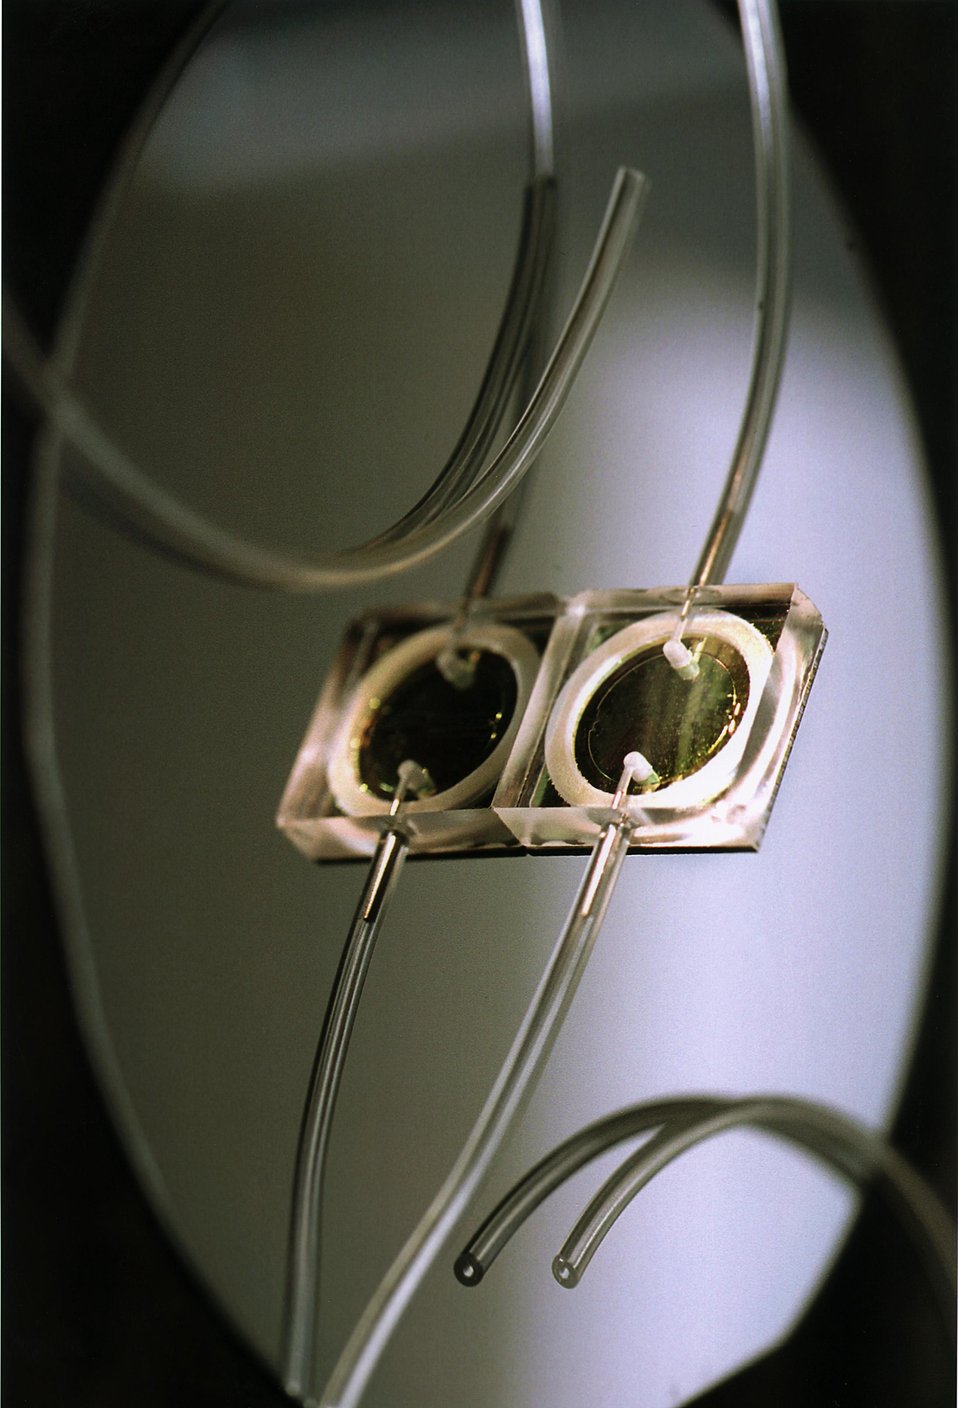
A DIME SIZE BIOCAVITY MICROLASER, CONNECTED TO TUBES THAT ASPIRATE BRAIN CELLS.
A 'SMART SCALPEL' MECHANISM INTENDED TO DETECT THE PRESENCE OF CANCER CELLS AS A SURGEON CUTS AWAY A TUMOR OBSCURED BY BLOOD, MUSCLE AND FAT HAS BEEN DEVELOPED IN PROTOTYPE BY SCIENTISTS AT DOE'S SANDIA LABORATORIES. THE DIME SIZE DEVICE, CALLED A BIOLOGICAL LASER, SHOULD HELP SURGEONS MORE ACCURATELY CUT AWAY MALIGNANT GROWTHS WHILE MINIMIZING THE AMOUNT OF HEALTHY TISSUE REMOVED.